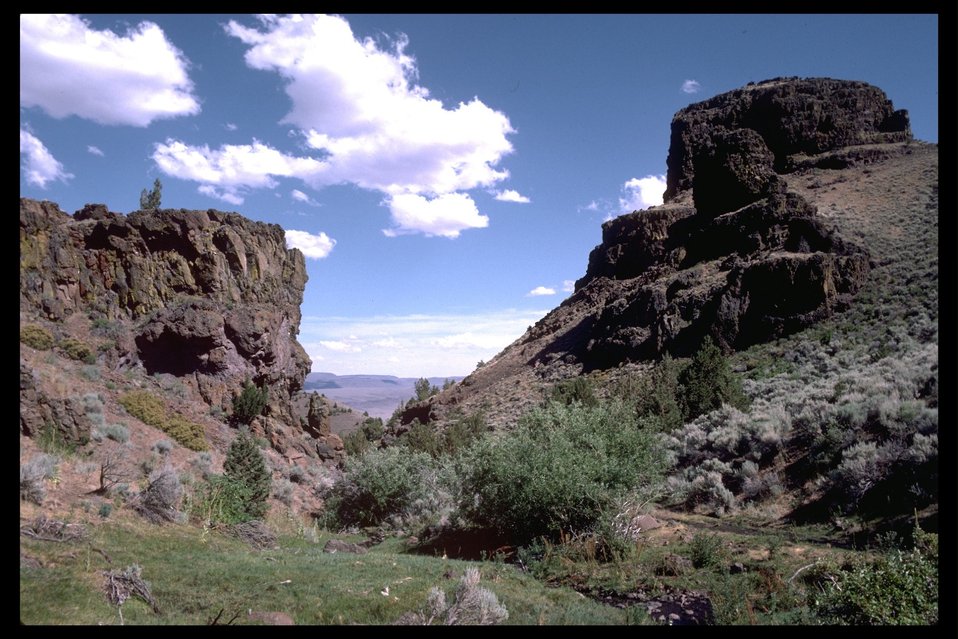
Stonehouse Canyon looking east in the Stonehouse WSA. On the right is Stonehouse, on the left is Lower Stonehouse.